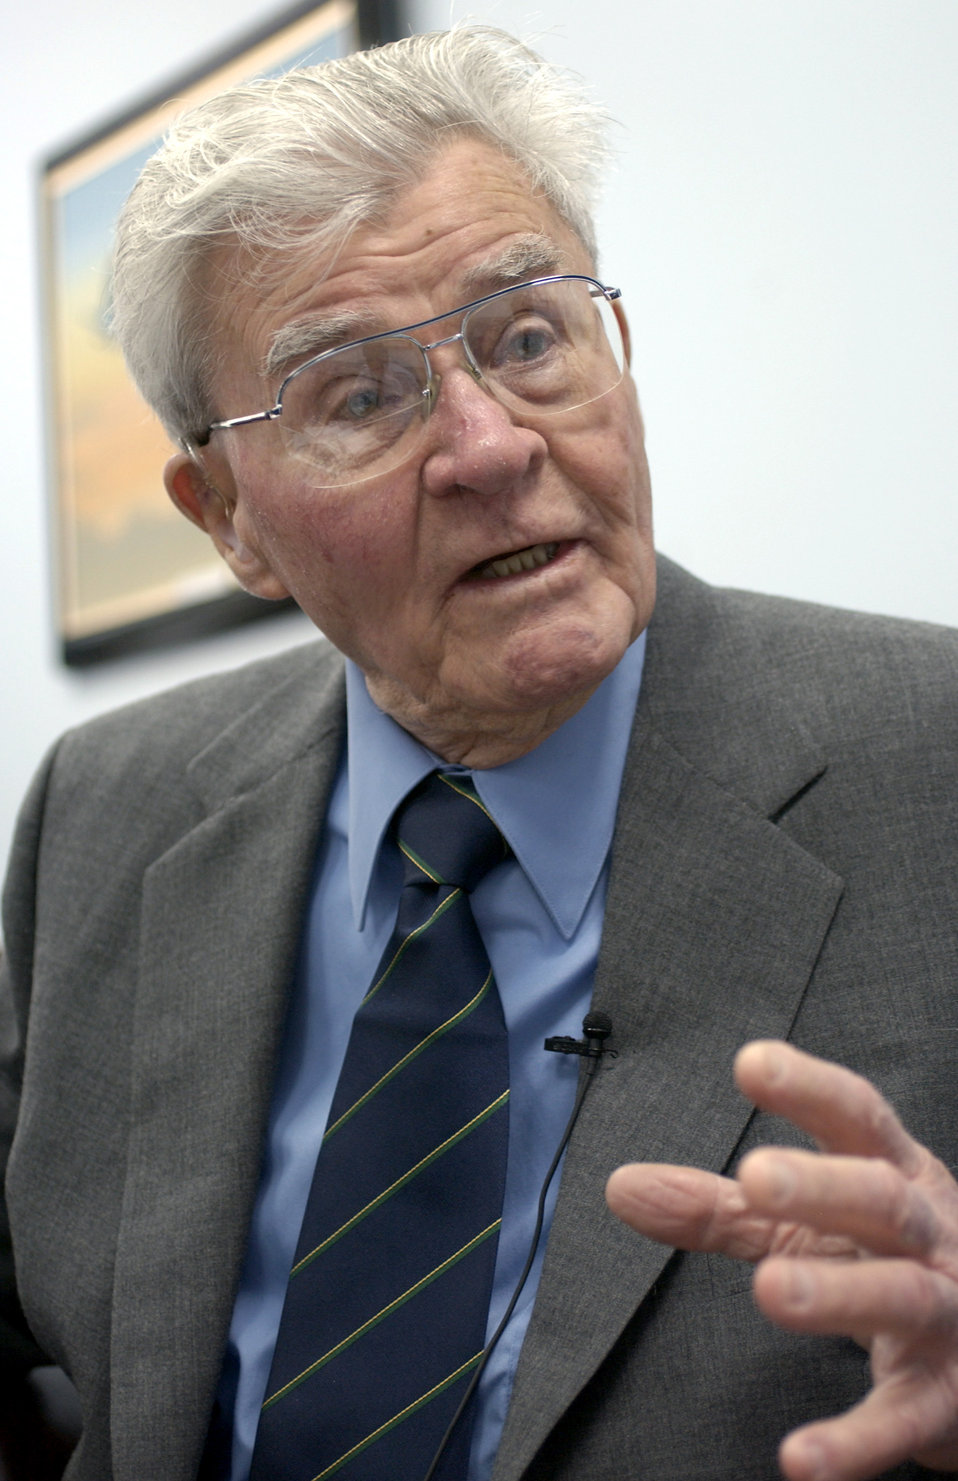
Retired pilot remembers

1990's -- WASHINGTON -- Retired Brig. Gen. Paul W. Tibbets talks about his experience flying a B-29 Superfortress, known as the Enola Gay, and dropping the first atomic bomb used as a weapon during World War II. He also autographed copies of his book